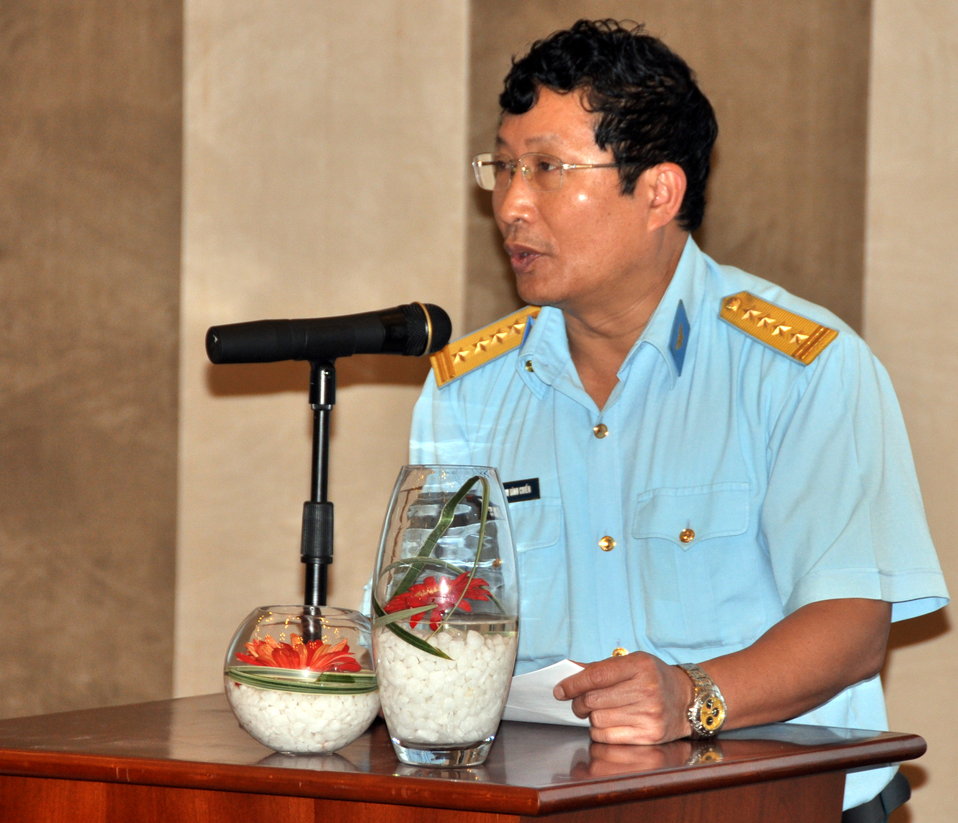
Col. Pham Dinh Chien, head of the Science, Technology, and Environment Division of the Air Defense Air Force Command of the Ministry of National Defence, Addresses the Danang Stakeholder Meeting

Environmental Remediation of Dioxin Contamination at Danang Airport

Danang, Vietnam
January 23, 2013
Photos @USAIDVietnam